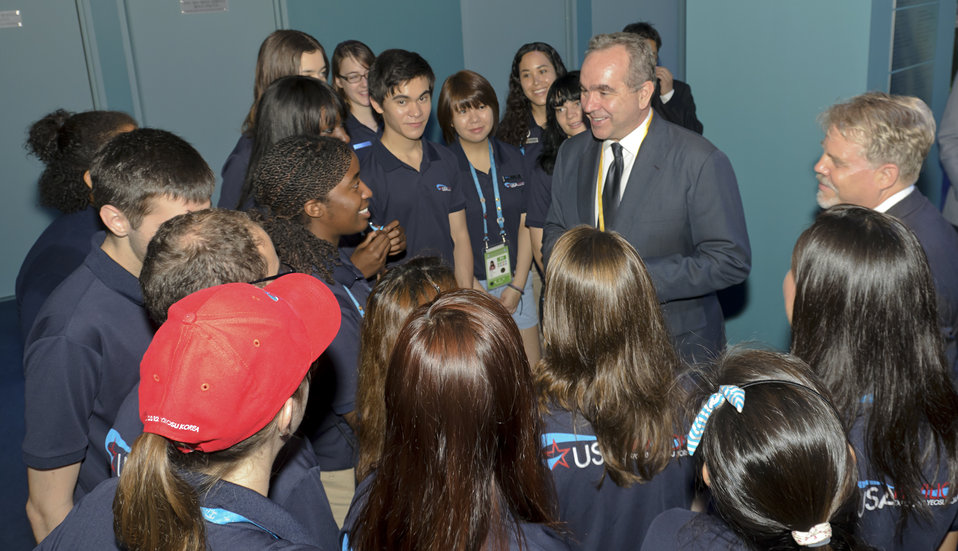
Assistant Secretary Campbell Meets With Student Ambassadors

Assistant Secretary of State for East Asian and Pacific Affairs Kurt Campbell meets with U.S. Student Ambassadors at the USA Pavilion 2012 in Yeosu, South Korea, on July 14, 2012.